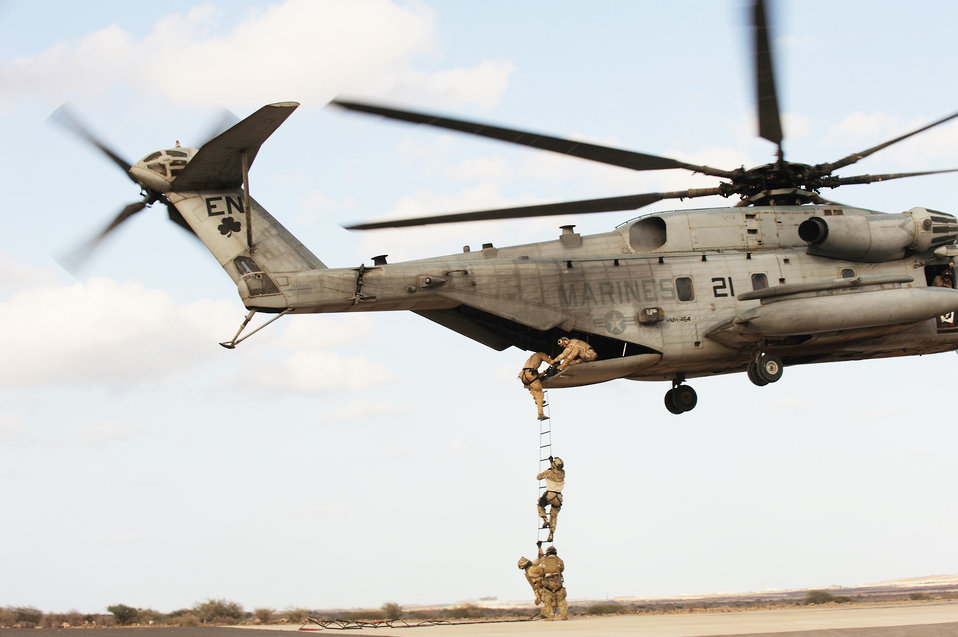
Pararescuemen hone skills in Africa

Air Force pararescuemen conduct a combat insertion and extraction exercise from a Marine CH-53 Sea Stallion helicopter in Djibouti, Africa, Jan. 5, 2010. The helicopter is attached to Heavy Marine Helicopter Squadron 464, and the two units are deployed to Combined Joint Task Force-Horn of Africa.